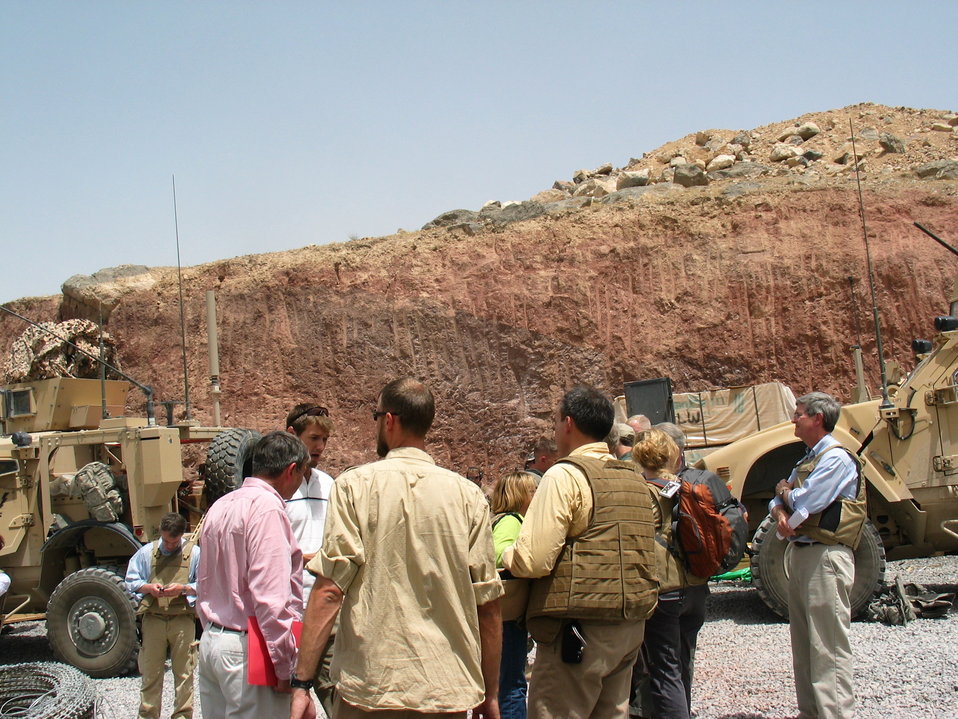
CODEL Berman